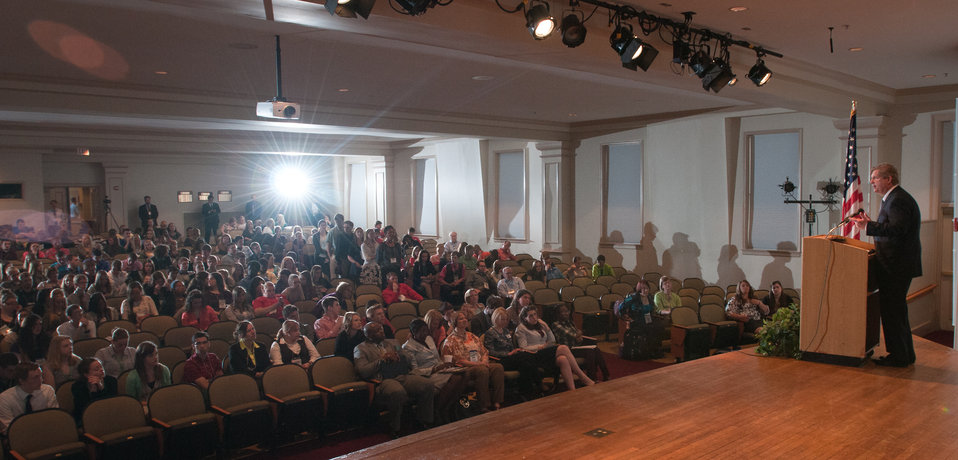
U.S. Department of Agriculture (USDA) Secretary Tom Vilsack takes questions from youth members lined up at microphones, during the 2013 National 4-H Conference, on Monday, April 8, 2013 in Chevy Chase, MD. Also speaking at the event is Agriculture Departmental Management Office of Advocacy and Outreach Director Carolyn Parker and National Institute of Food and Agriculture Director Dr. Sonny Ramaswamy. These 4-H youth members are in grades 10-12 (15-19 years old).